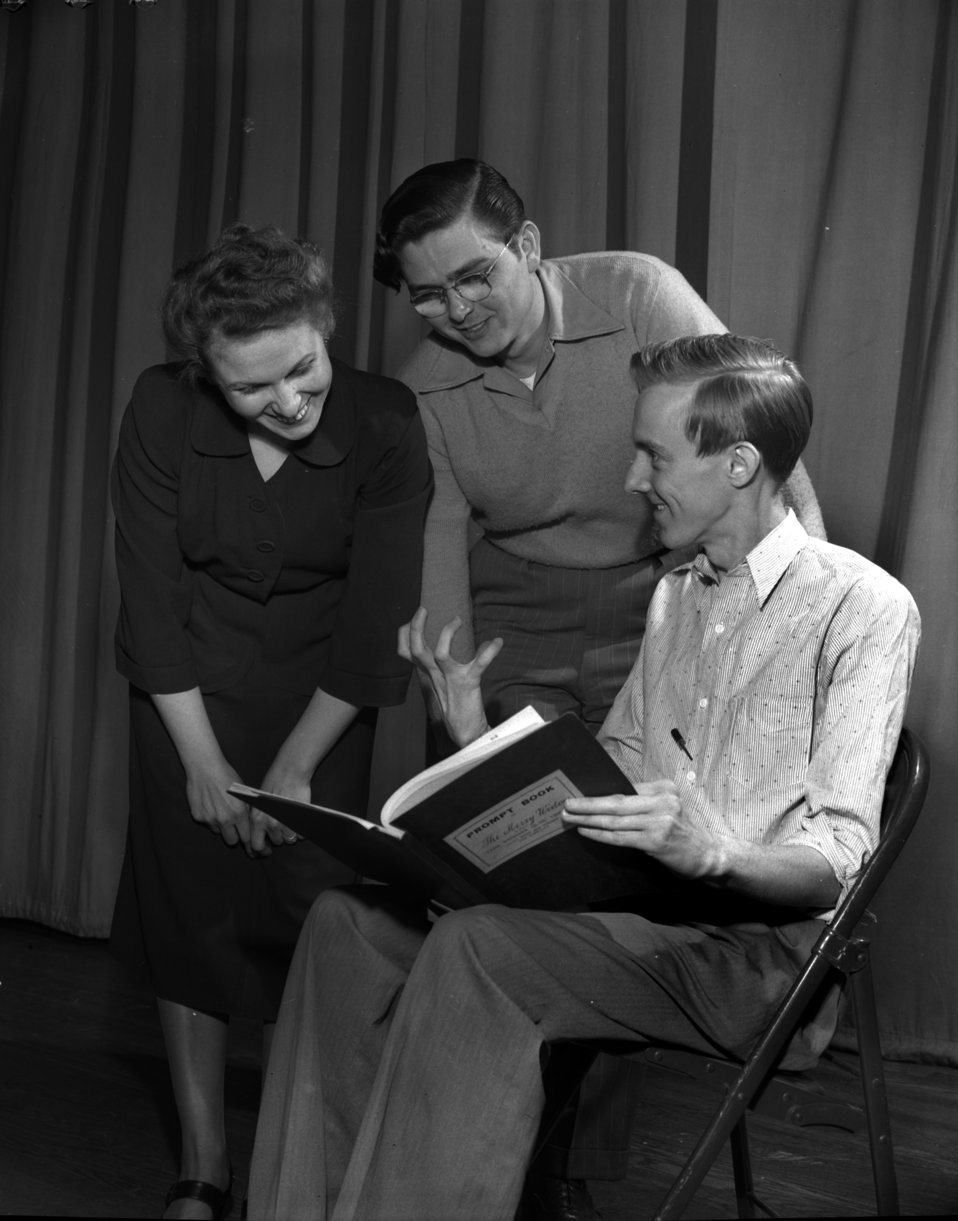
Community Chorus Rehearsal 'Merry Window'

004146-2a DOE photo by Ed Westcott

Oak Ridge Tennessee March 1948